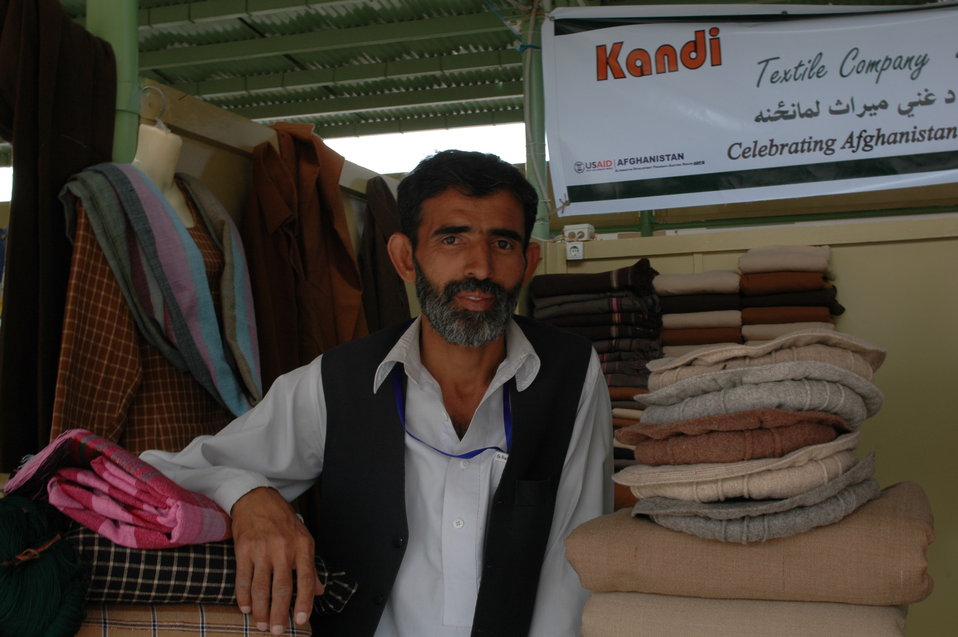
AgFair businessman

On May 20, 2009, Ambassador Eikenberry joined government officials, farmers, agribusiness representatives, and international investors at the launch of the Kabul International AgFair on May 20. Held at the Ministry of Agriculture, Irrigation and Livestock’s Badam Bagh Demonstration Farm in Kabul, the fair showcases Afghanistan’s wealth of fresh produce, provides lucrative business opportunities, and demonstrates innovative agricultural technologies. It is expected to attract more than 50,000 participants from May 21-22.

U.S. Ambassador Karl Eikenberry and Afghan Acting Minister of Agriculture, Irrigation and Livestock (MAIL) Saleem Kunduzi gave opening remarks at the AgFair’s launch. “The United States Government is co-sponsoring national and regional AgFairs like this one to encourage trade and generate business opportunities in the agriculture sector,” Ambassador Eikenberry said. “In a country that is 80 percent rural, promoting licit crops and agriculture sector job creation are two essential steps to successful development in the region.”

Member of Parliament Abdul Salam Qazizada offered bold remarks, stating that we need to engage more with farmers in every province throughout the country.

Following the ceremony, Ambassador Eikenberry visited a number of vendors at the fair with Acting Minister Kunduzi and Mr. Qazizada. In speaking with farmers displaying their produce, Ambassador Eikenberry found that many have increased yields due to USAID assistance, have found regional buyers for their produce, and were grateful for the opportunities that AgFair provides.

Ambassador Eikenberry also discussed the state of agriculture with Minister Kunduzi and Mr. Qazizada. They agreed that while some progress has been made, there is a great deal more work to be done. Ambassador Eikenberry reiterated from his speech that USDA Secretary Vilsack recently met with Minister Rahimi to discuss the U.S. commitment to agriculture development. In a message to the Afghan public, Secretary Vilsack stressed that the USG aims to play a leading role by bringing more agriculture experts to the provinces and supporting agriculture research such as the Badam Bagh Demonstration Farm. Additionally, he looks “forward to working together to increase agricultural productivity, which will result in more jobs throughout the entire value chain, and a better quality of life for the citizens of Afghanistan.”

The United States Government is proud to support Afghan agriculture. Since 2002, America has provided more than 1 billion dollars in assistance to agriculture and rural development. AgFairs like the one Ambassador Eikenberry visited creates awareness of Afghanistan’s expanding agricultural sector, promotes new agricultural technologies that increase productivity, and provides a forum to connect farmers to local and international buyers. These results will contribute to Afghanistan’s prosperity.

We are already seeing the results of these fairs. Since 2007, Afghanistan’s agricultural fairs have attracted more than 500,000 participants from across the nation and the world, generated millions of dollars in sales of the country’s high-value produce, and provided participants with a competitive edge in one of the fastest growing markets in Central Asia.

As Ambassador Eikenberry stated, “The word is out – with over 180 international businesses represented at this fair, it is obvious that Afghanistan has sparked the interest, and appetite, of the world.”